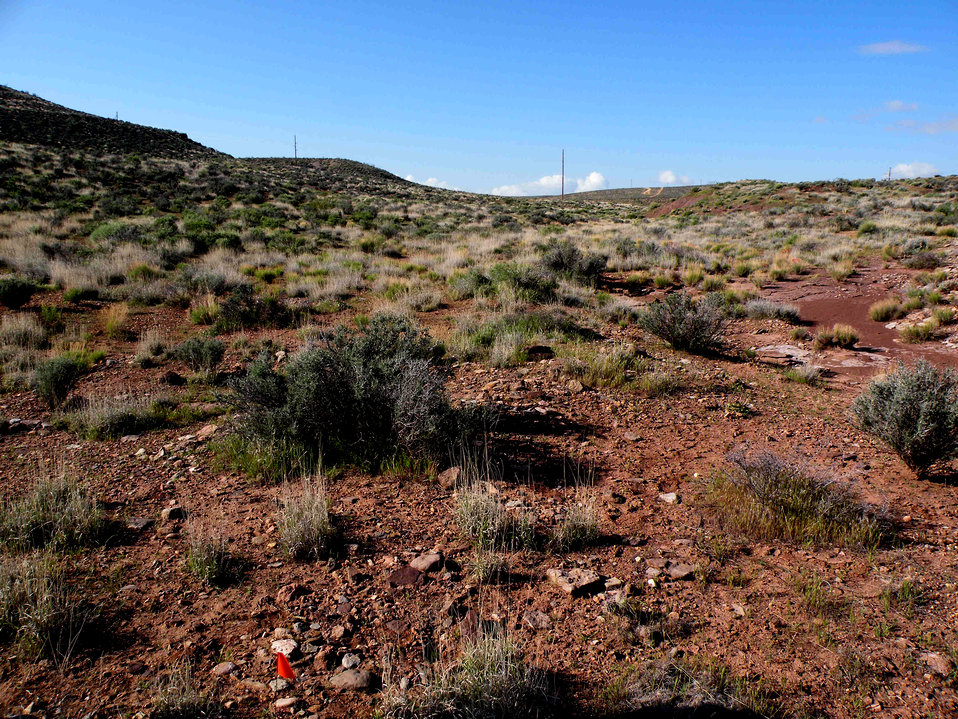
Holmgren milkvetch - habitat (Astragalus holmgreniorum)

Holmgren milkvetch is endemic to northern Mohave County in Arizona and to Washington County in SW Utah. It occurs in warm desert shrub communities and grows in Virgin River limestone cobble between 2,700 and 2,800 ft. in elevation. It is listed endangered.